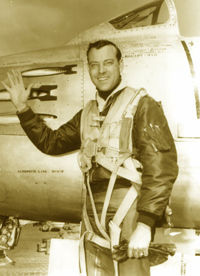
51st Fighter Wing Aces

First Lt. Robert H. Moore became the third ace of the wing on April 3, 1952. Lieutenant Moore was assigned to the 16th Fighter-Interceptor Squadron.